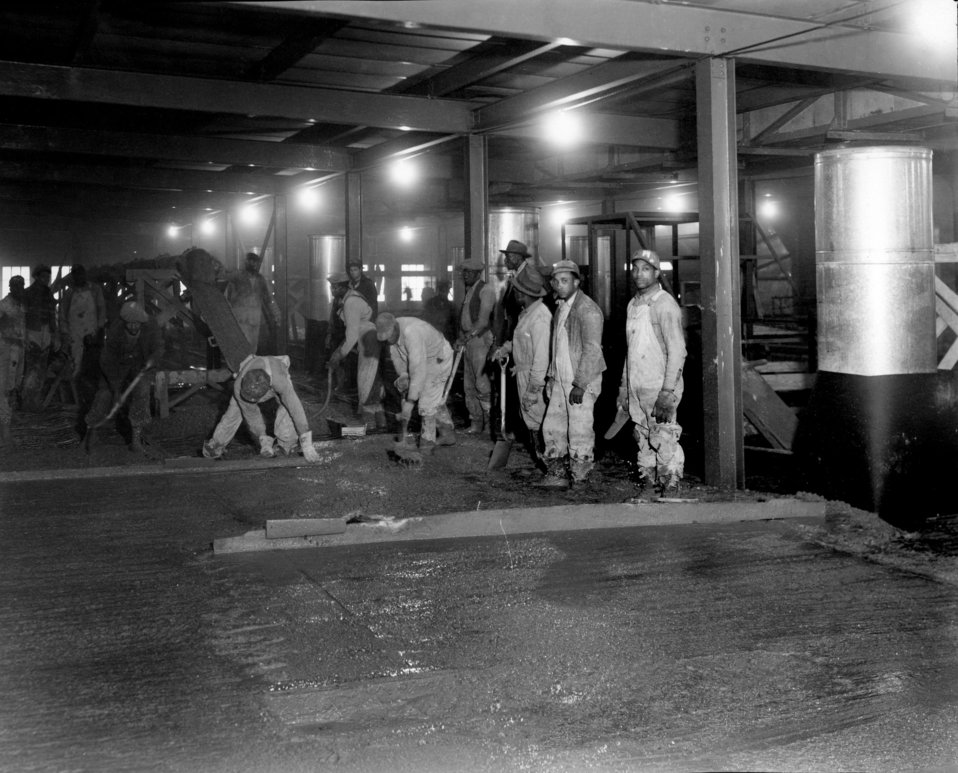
Pouring floor slab K-306-4 Oak Ridge

K-25-40 DOE photo Ed Westcott 1945 Oak Ridge Tennessee